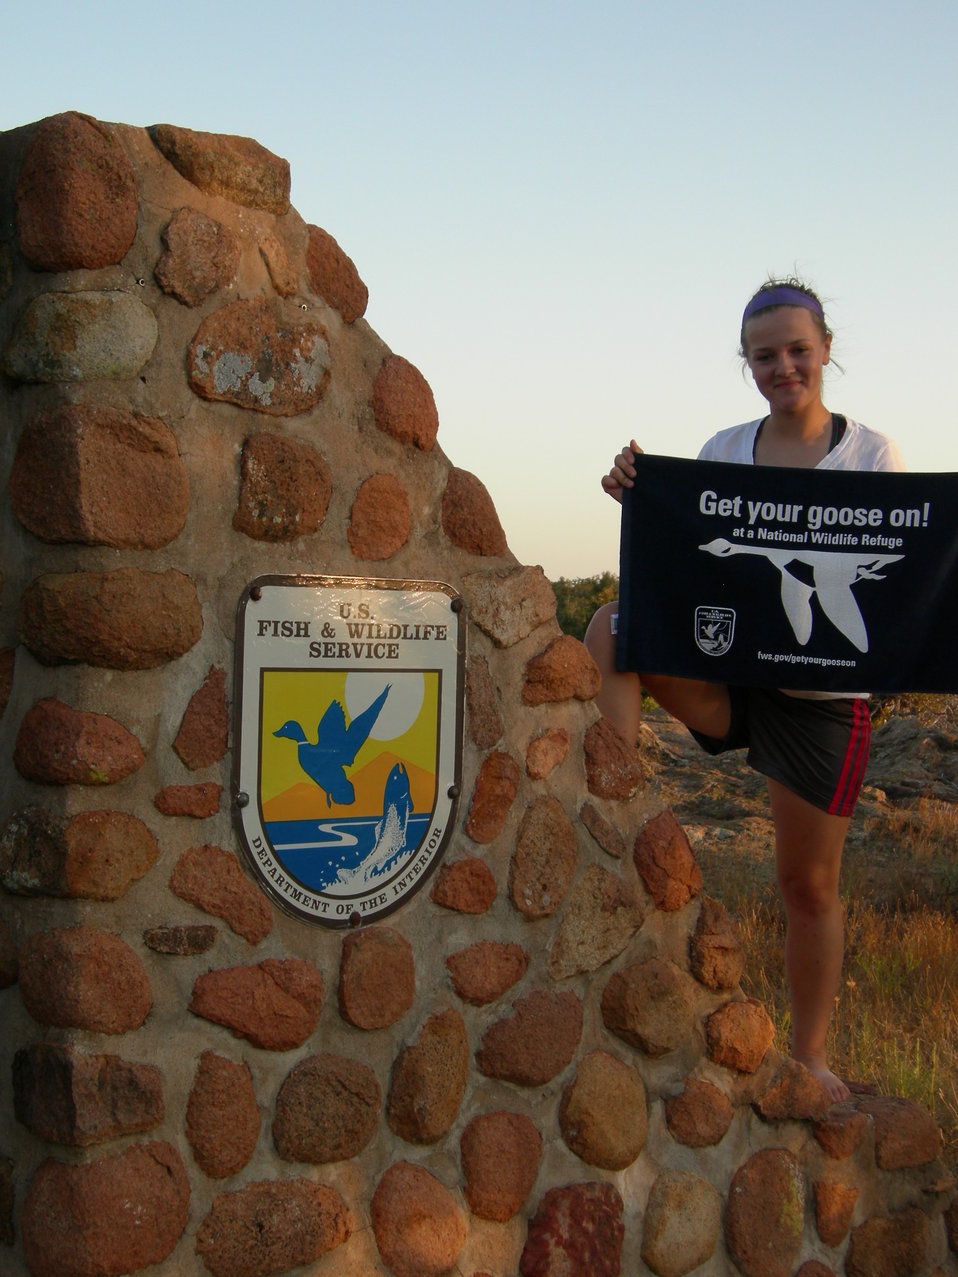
Get Your Goose On!

Wichita Mountains National Wildlife Refuge in Oklahoma.